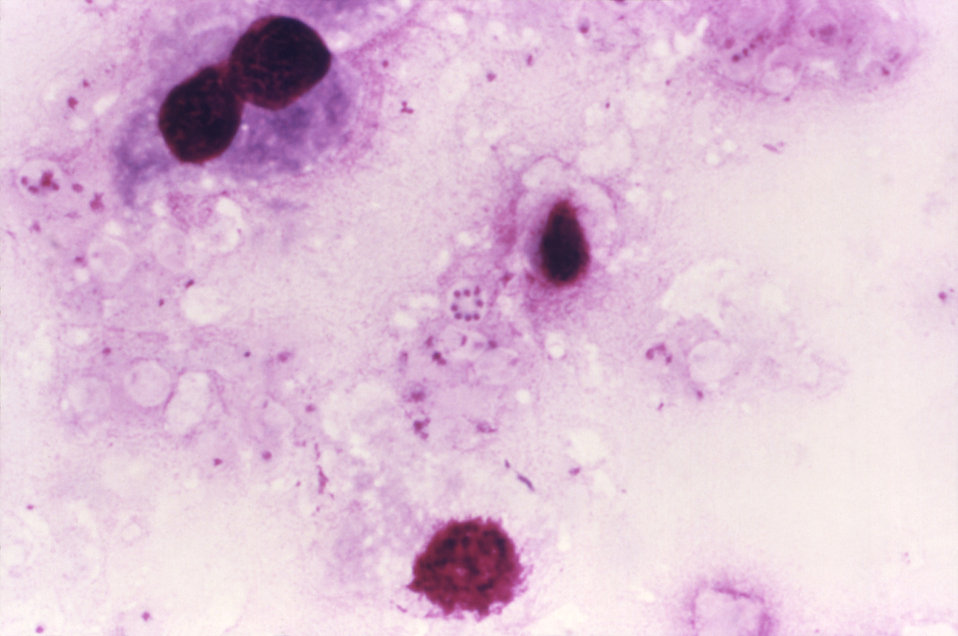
At a magnification of 1000X, this photomicrograph reveals Pneumocystis jirovecii fungi, which were present in this Giemsa-stained impression smear of rat lung tissue. Formerly known as Pneumocystis carinii, and classified as a protozoa, investigative tests upon this organism's nucleic acid and biochemical composition has since placed it in the Kingdom of Fungi.These fungi are found in the lungs of mammals where they reside without causing overt infection until the host's immune system becomes debilitated. Then, an oftentimes lethal pneumonia can result. Note the round cyst in the very middle of this image containing eight immature haploid neuclei, as well as numbers of freed trophozoites.